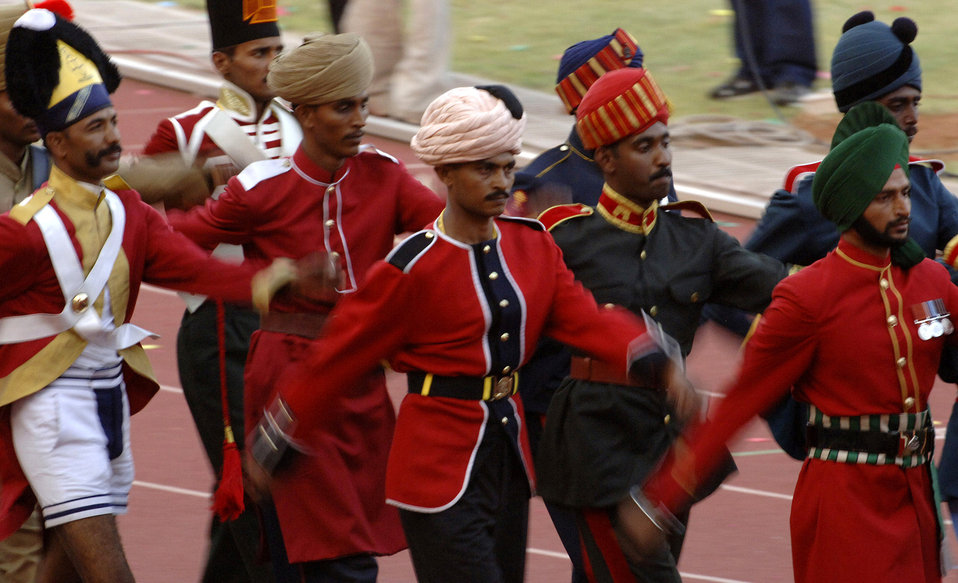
4th CISM World Military Games

Indian soldiers in historical, traditional and contemporary ceremonial dress lead the athletes participating in the 4th Conseil Internationale du Sport Militaire Military World Games, set in Hyderabad, India, Oct. 14 to 21. This is the largest international military Olympic-style event in the world. In this fourth edition of the games, 103 countries and more than 5,000 athletes are competing Oct. 14 to 21 in boxing, diving, soccer, handball, judo, military pentathlon, parachuting, sailing, shooting, swimming, volleyball and track and field. The purpose of the Military World Games is to promote